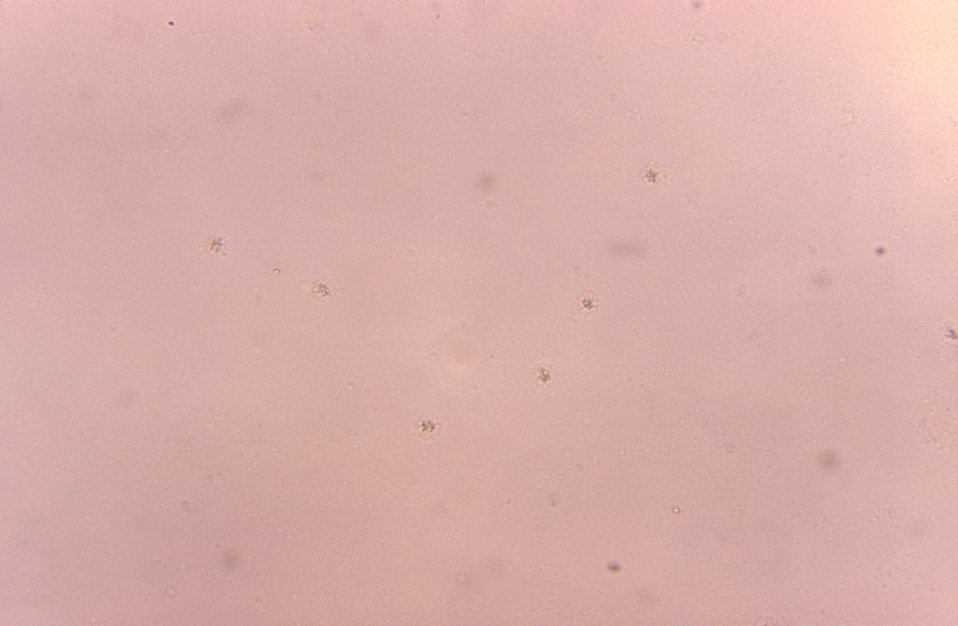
Magnified 125X, this photograph revealed some of the morphologic features exhibited by a number of small-sized Ureaplasm urealyticum colonies, otherwise known as T-strain mycoplasma. These organisms produced heavy growth on 4ml agar.